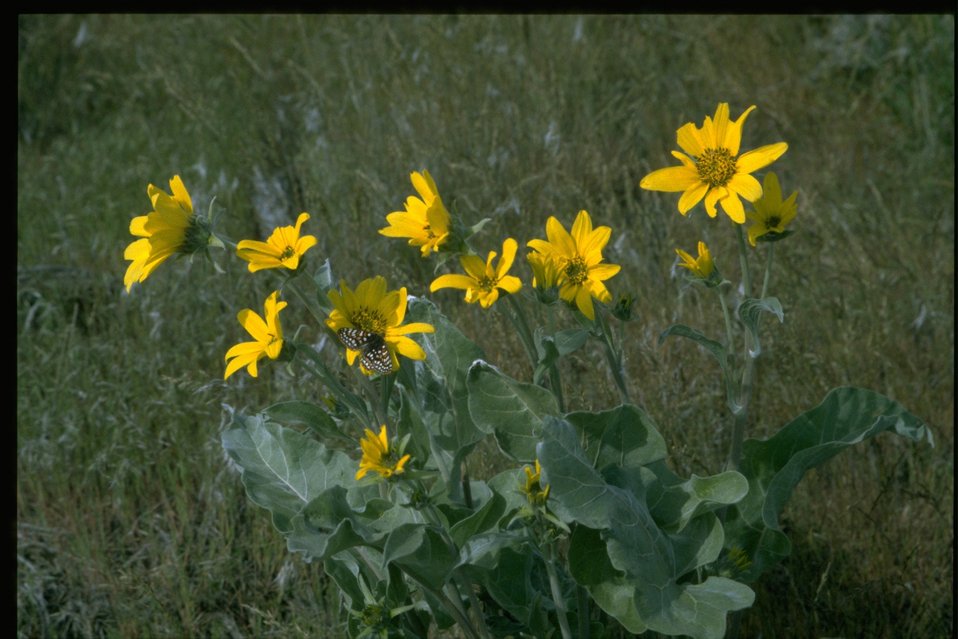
Medium shot of Arrowleaf Balsam Root (Balsamorhiza sagittata).